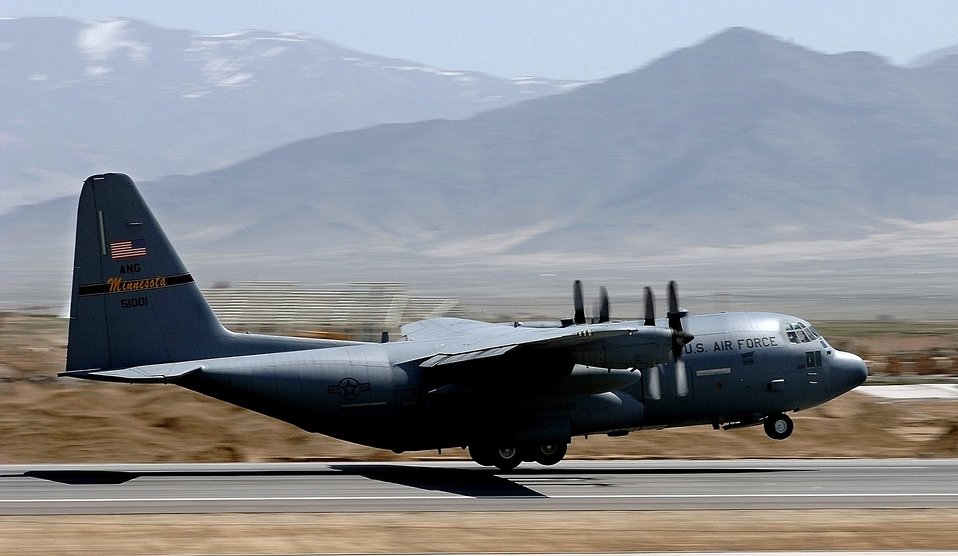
C-130 airdrops provide critical supplies to U.S. forces

A C-130 Hercules takes off from Bagram Air Base, Afghanistan, March 27 in support of Operation Enduring Freedom. The Air National Guard aircrew is providing critical supplies U.S. ground forces in Afghanistan.